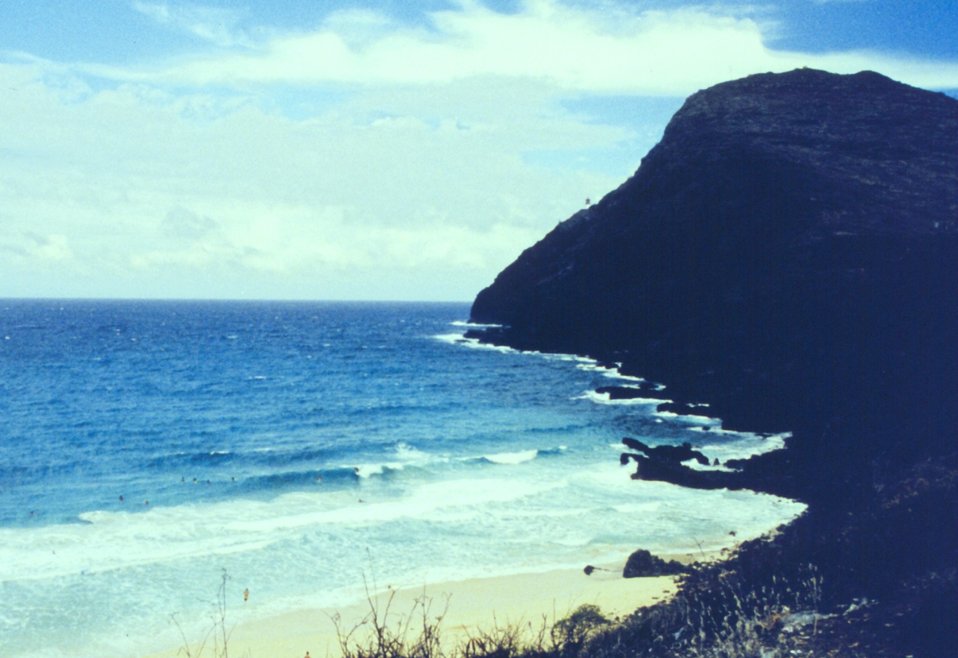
A volcanic headland jutting into the sea. Note the surfers.